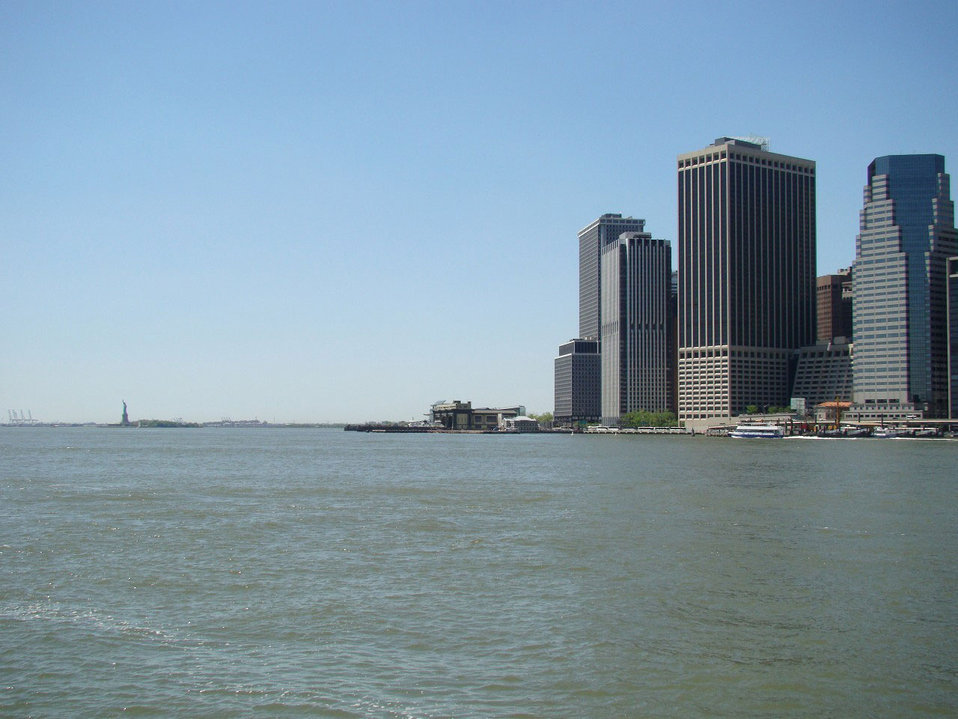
South end of manhattan island with statue of liberty in background.